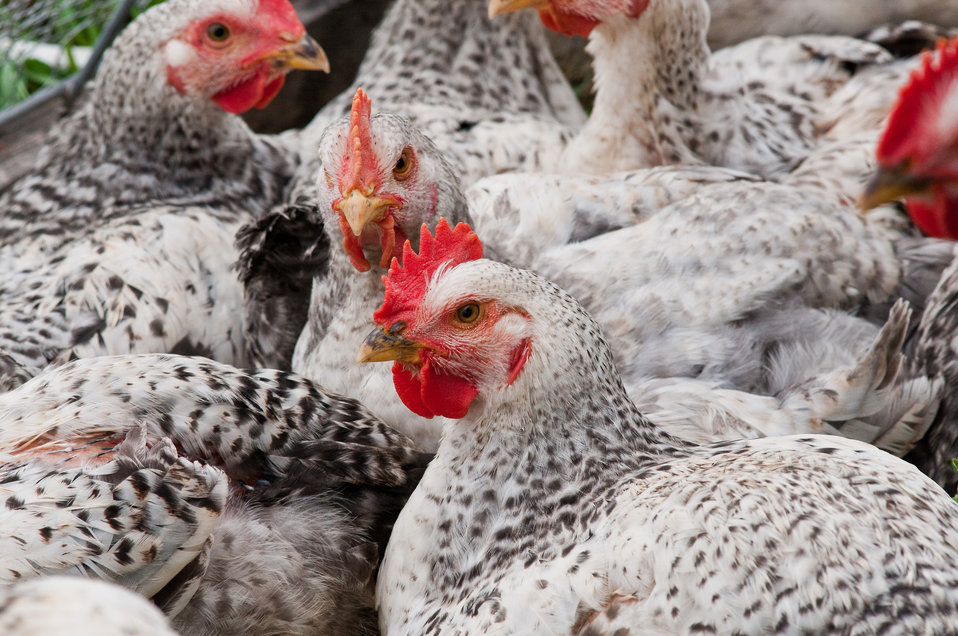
Broiler chickens graze on organic pastures and live in pens that protect them from predators, direct sun light, and wind at Nick’s Organic Farm, owned by Nick Maravell in Adamstown, MD on Friday, July 12, 2013. The enclosures are light enough to be moved by hand, each day, one consecutive section at a time. This allows the pasture to easily recover from the grazing. The farm produces Black Angus beef, chicken, turkey, eggs, hay, soybeans, corn, alfalfa, orchard grass, rye; and other crops. The cattle are100% grass-fed receiving certified organic pasture, certified organic hay (in winter), water and mineral salts mixed with sea kelp. The cattle are not fed hormones, antibiotics or animal products. Poultry feed from grain is ground from organic grain. The poultry also graze on organic pastures. The farm has conducted on-farm research with federal, state and non-profit agencies to refine organic practices. An organization such as the U.S. Department of Agriculture (USDA) Agricultural Research Service (ARS) center in Beltsville has been able to conduct research to improve organic crops and to breed and manage the cattle so that they have.